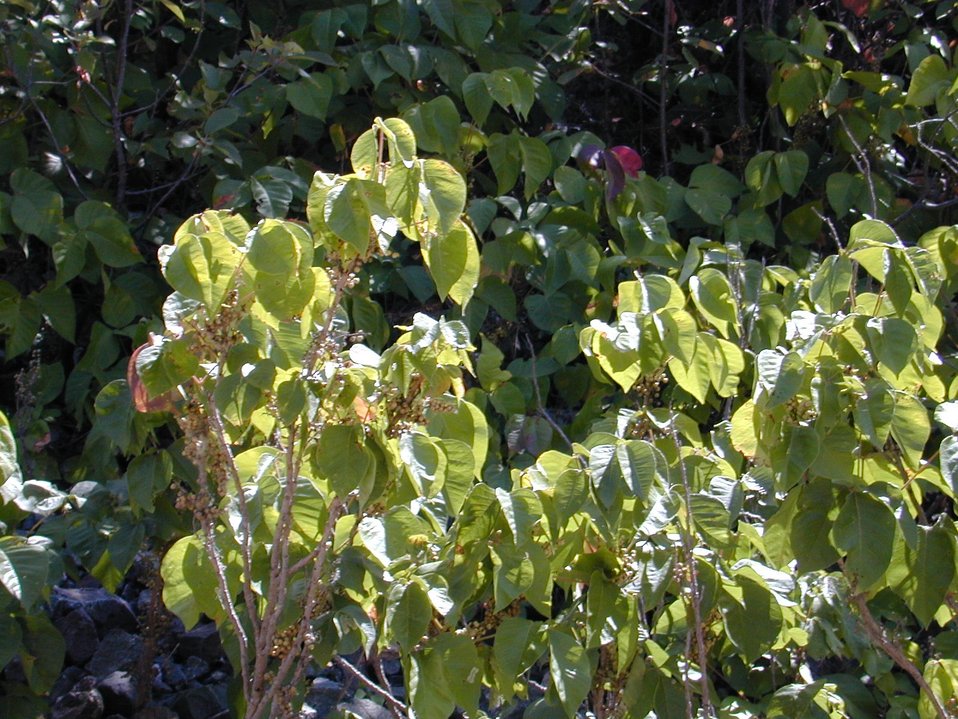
Poison Ivy Cottonwood Field Office UCSC Upper Columbia Salmon Clearwater District